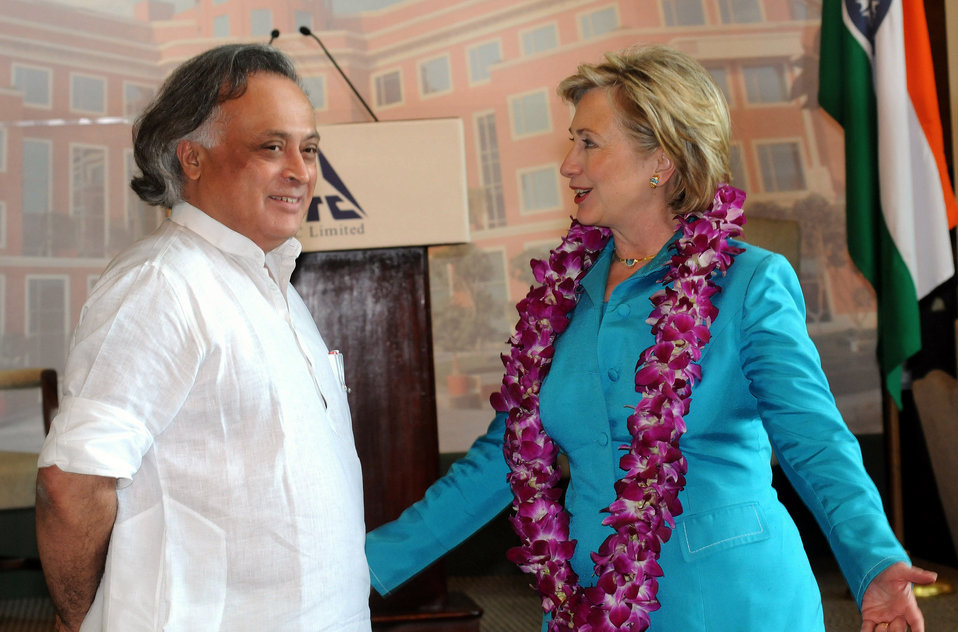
Secretary Clinton Visits ITC Green Center

U.S. Secretary of State Hillary Rodham Clinton is greeted by Minister for Forests and Environment Jairam Ramesh at the ITC Green Center in Gurgaon, outside of New Delhi, India July 19, 2009.